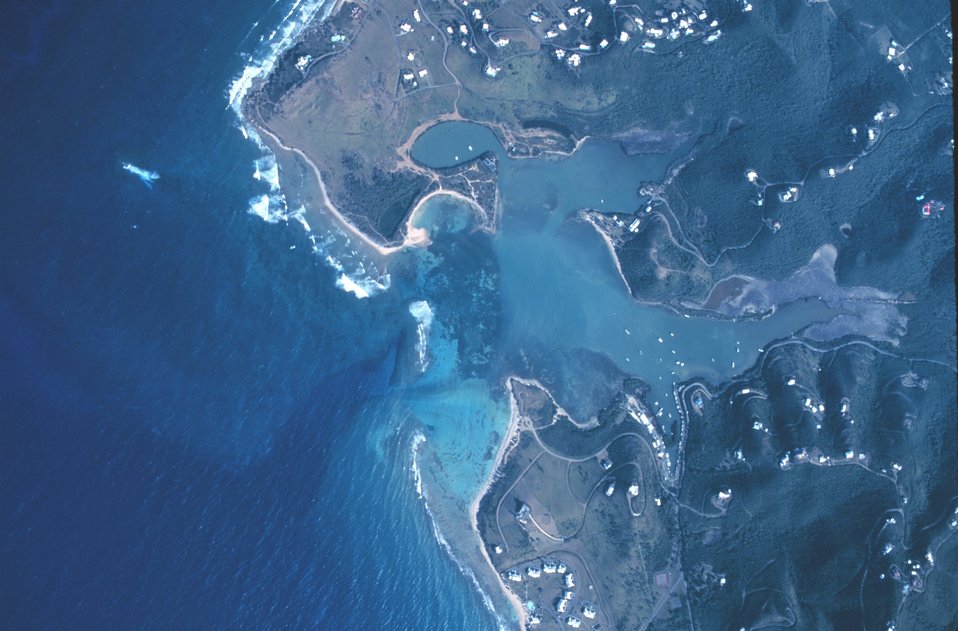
Aerial view of Salt River Bay.